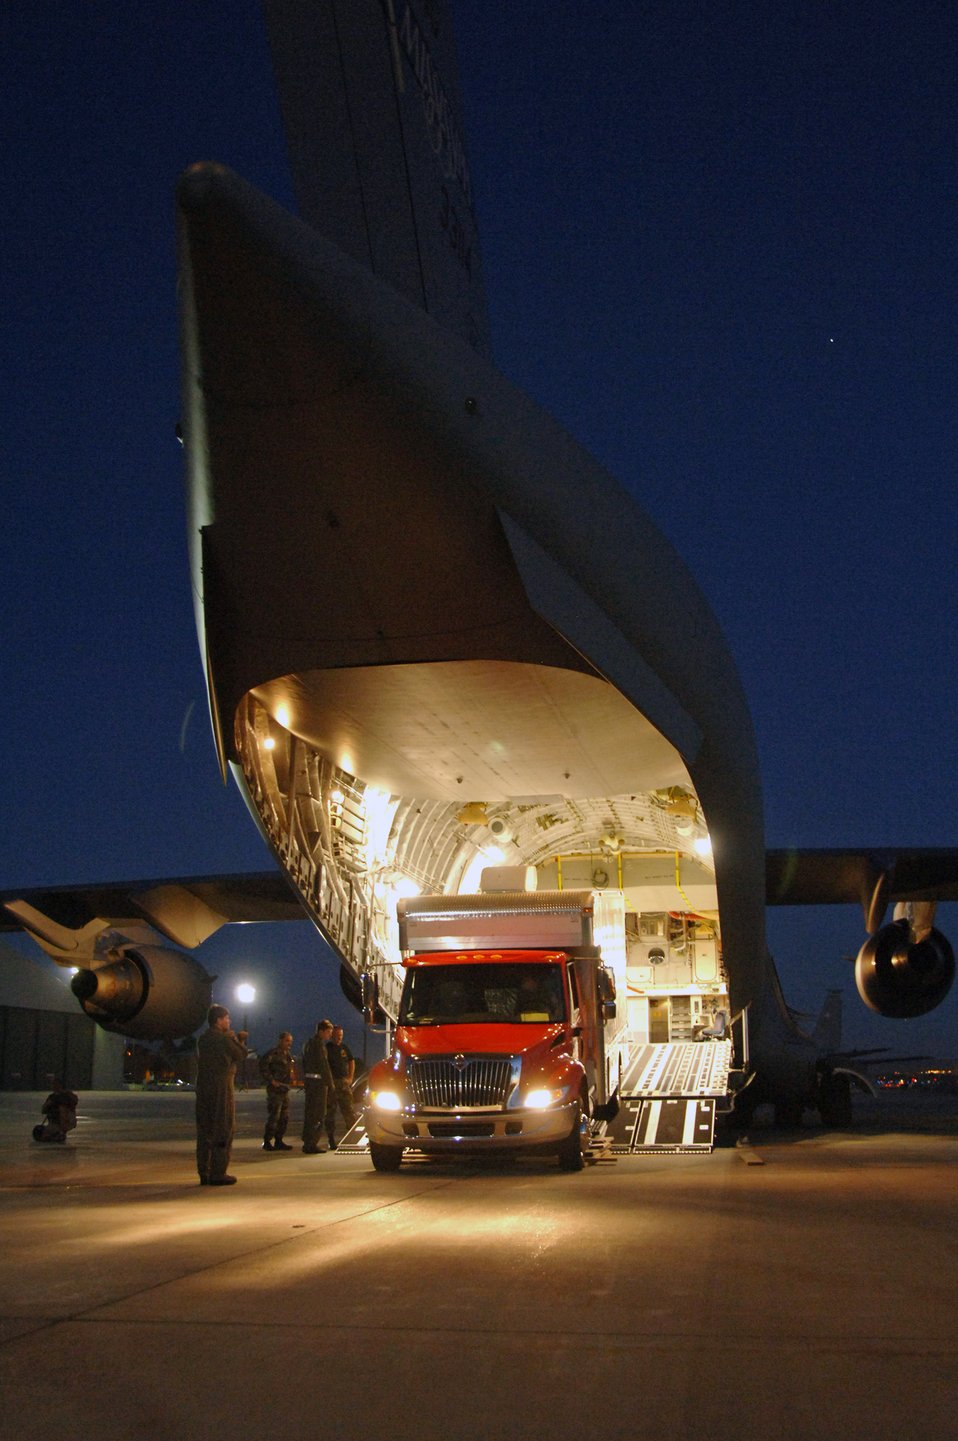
Air National Guard assists with Utah mining rescue

Airmen from the 151st Air Refueling Wing in Salt Lake City assist in the arrival of a C-17 Globemaster III from the Mississippi Air National Guard's 172nd Airlift Wing Aug. 9. The C-17 transported equipment used by Substrata Camera Services of Knoxville, Tenn., from its location in Topeka, Kan., to assist in rescue operations for six stranded Utah miners. The equipment will allow rescuers the ability to position a camera in the mine and assess the situation from a 360-degree angle. It will allow rescue crews to have a better idea of conditions inside the collasped mine.